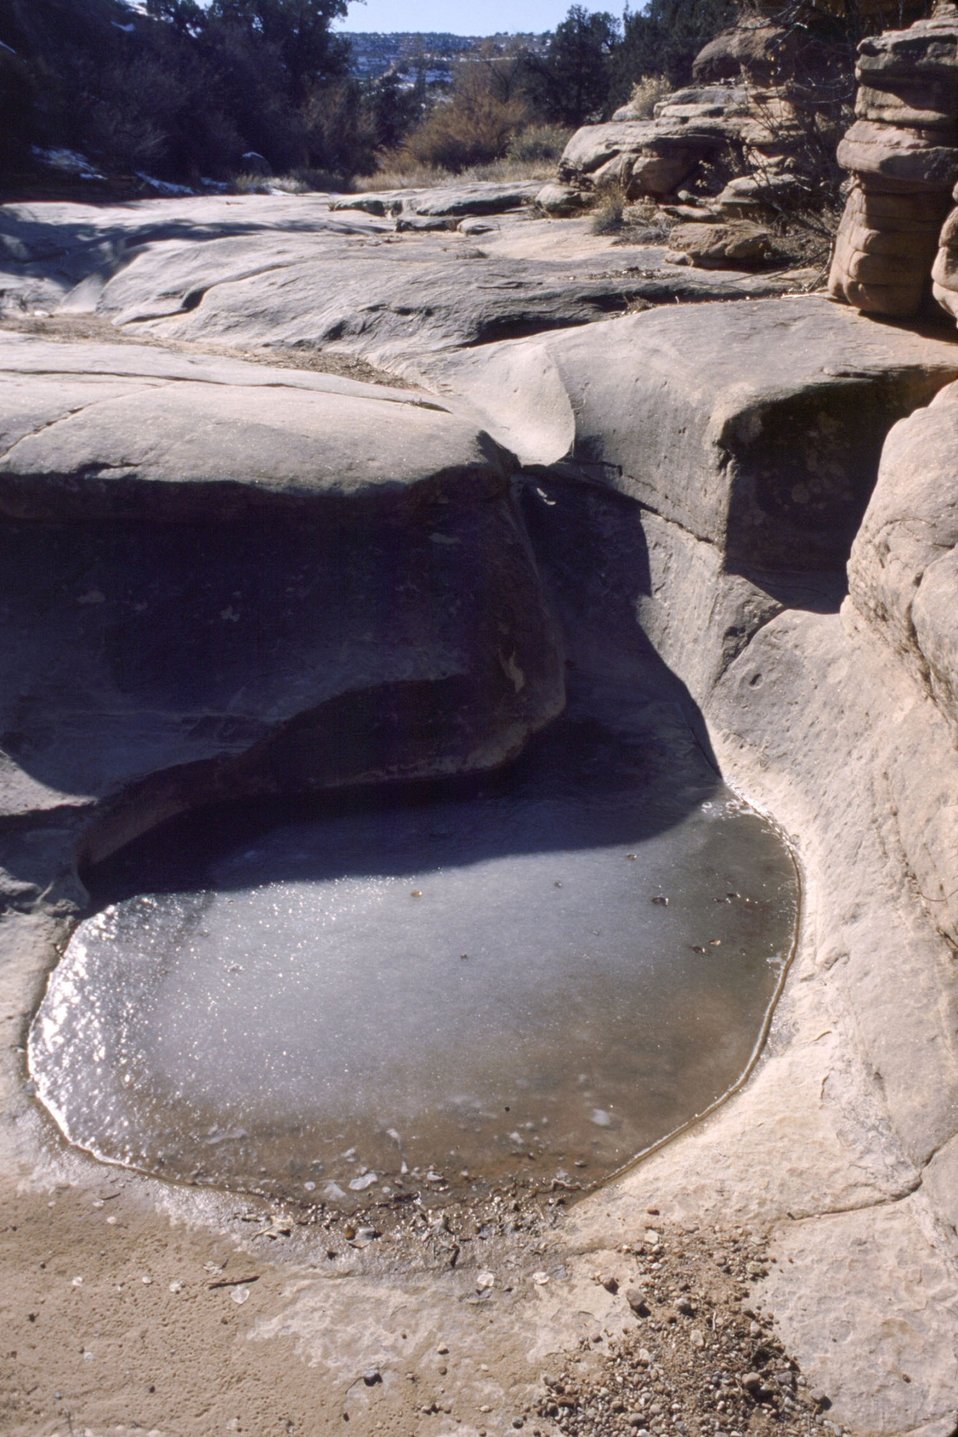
Flume Canyon